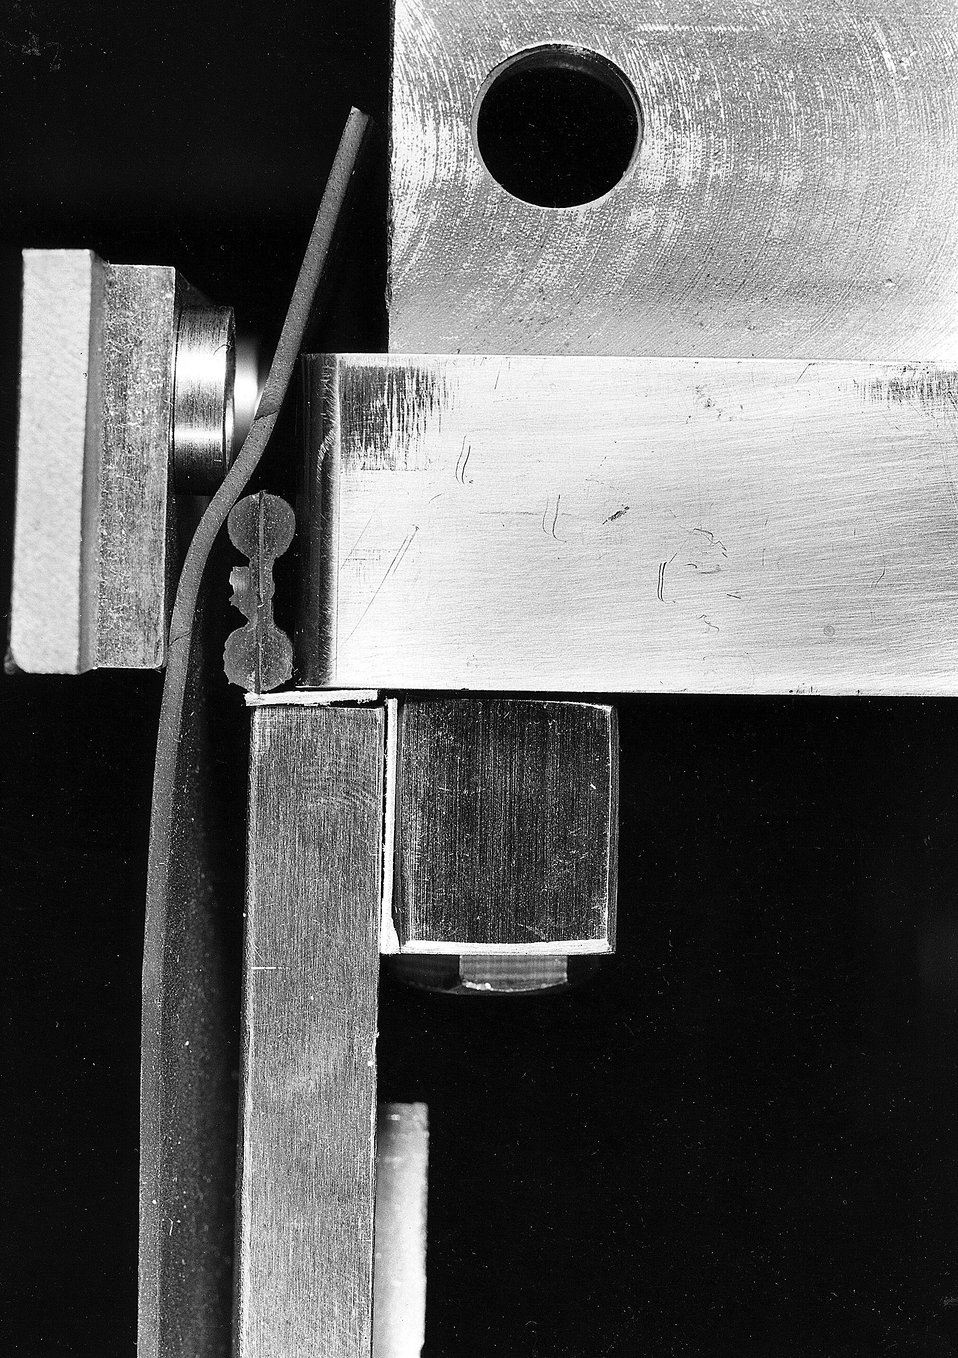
Detail of the assembly of the Cosmotron vacuum chamber showing Myvaseal blanket passing over dumbell gaskets and electrical isolation of adjacent metal pieces. c. 1951